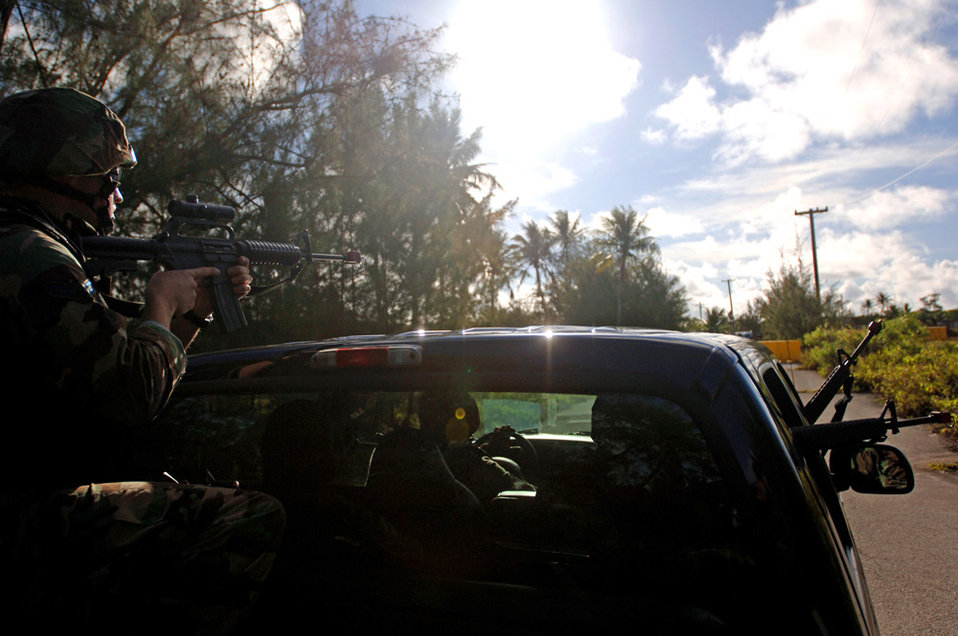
Preparing for the real thing

ANDERSEN AIR FORCE BASE, Guam -- Airman 1st Class Ted Hestilow watches out for